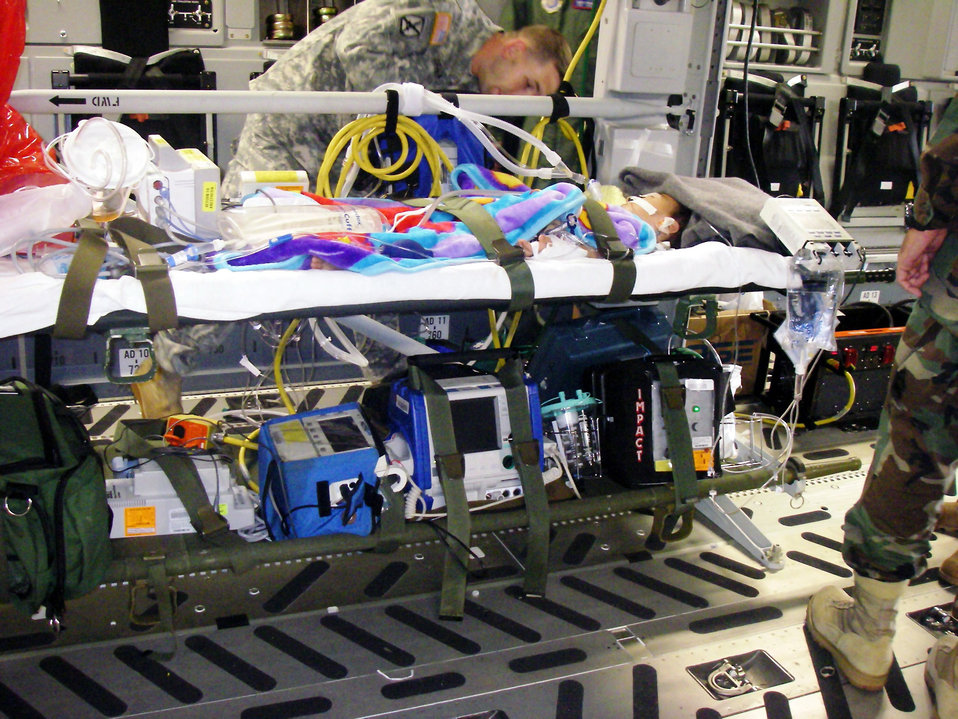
Joint team helps save 2-year-old boy in Pacific

An aeromedical evacuation team member tends to 2-year-old John Tenorio, who is on a patient litter and hooked up to mobile critical care equipment while en route from Saipan on a C-17 Globemaster III to Hickam Air Force Base, Hawaii.